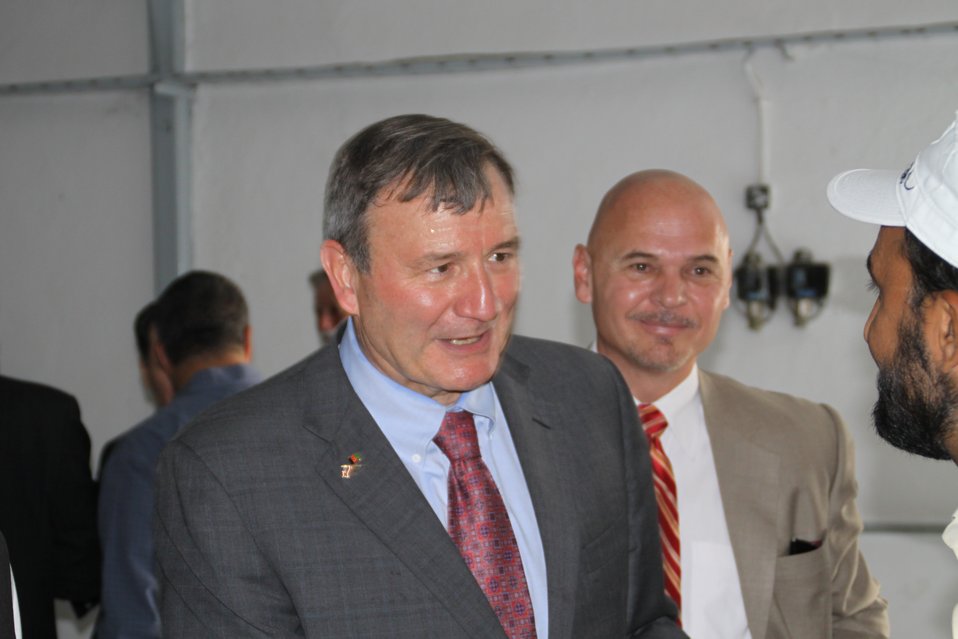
Badam Bagh Farm